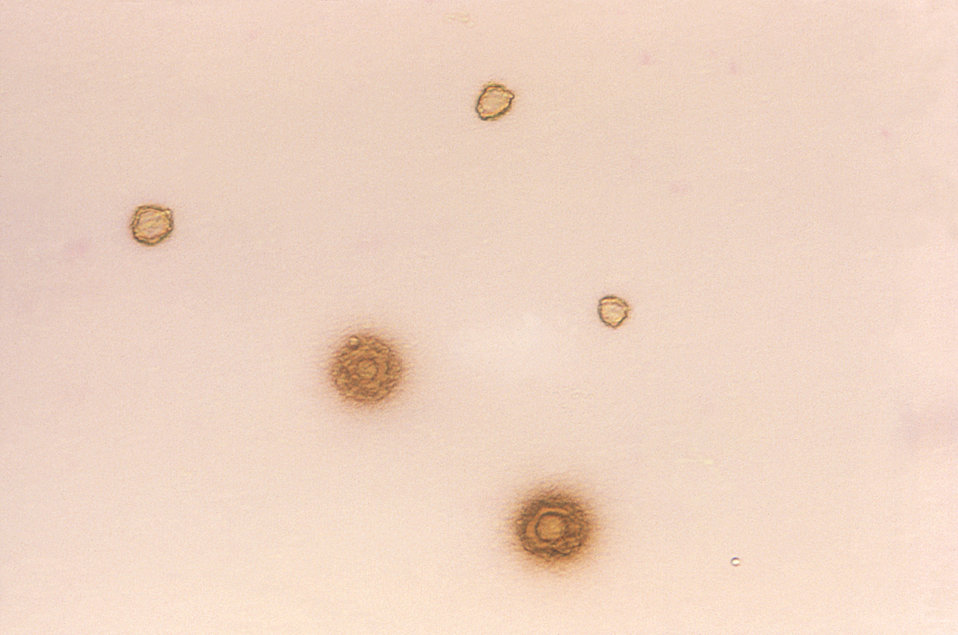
This photograph depicts a number of Gram-negative Mycoplasma hominis, and T-strain Mycoplasma isolates, which had been grown on agar medium.